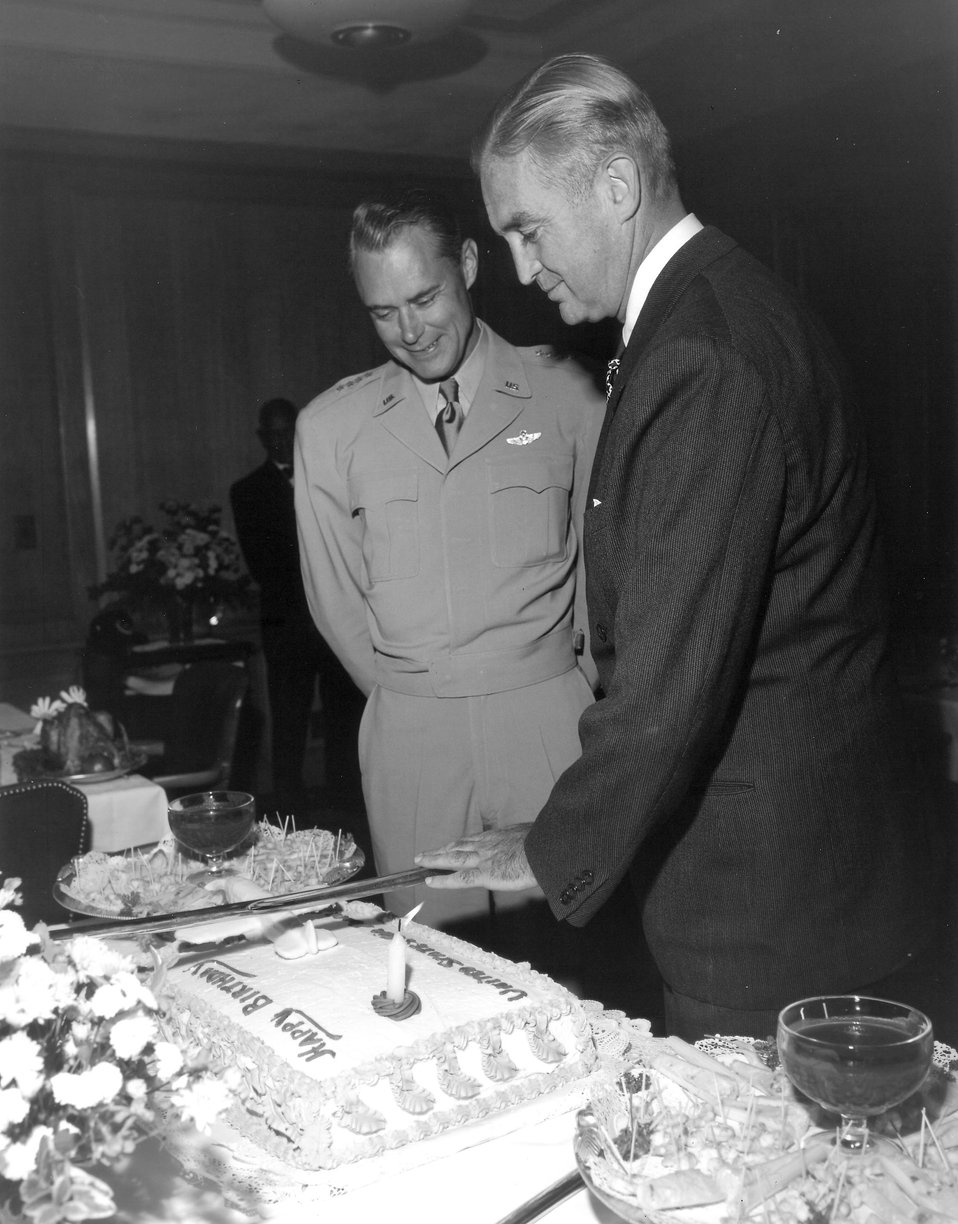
SECAF Symington, CSAF Vandenberg

1948 -- Secretary of the Air Force W. Stuart Symington prepares to cut the cake to celebrate the first anniversary of the Air Force as Chief of Staff of the Air Force Gen. Hoyt S. Vandenberg looks on.